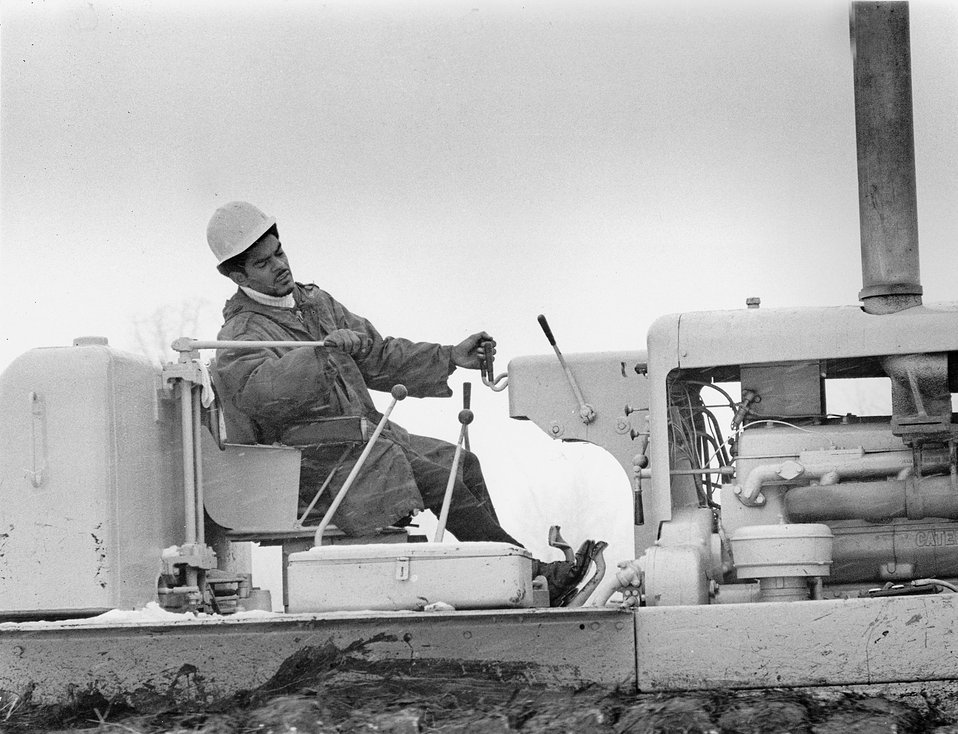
Earth moving demonstration as part of the Linac groundbreaking ceremony. 1968